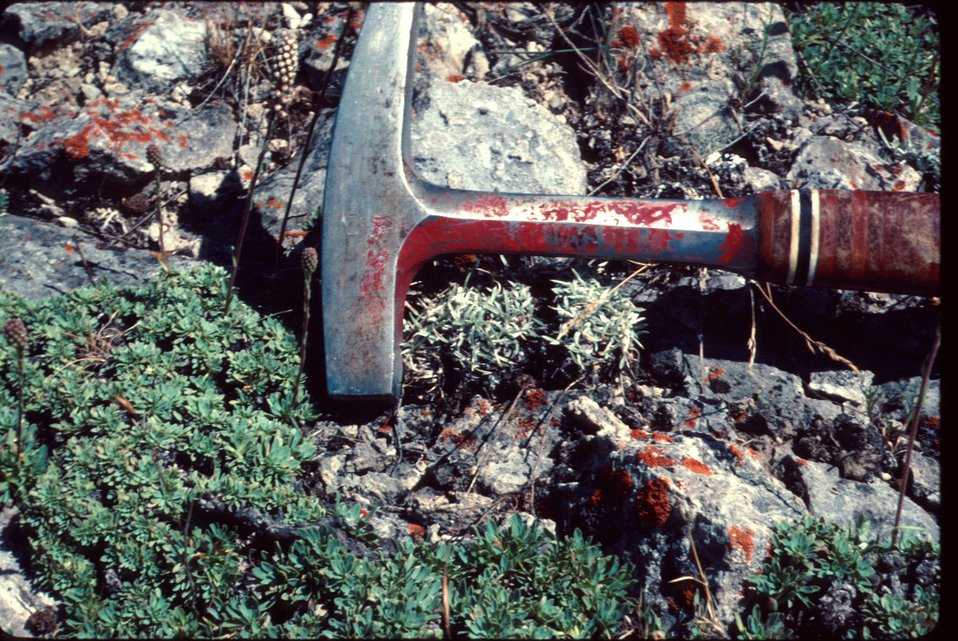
Astragalus spatulatus Milkvetch Wildflower